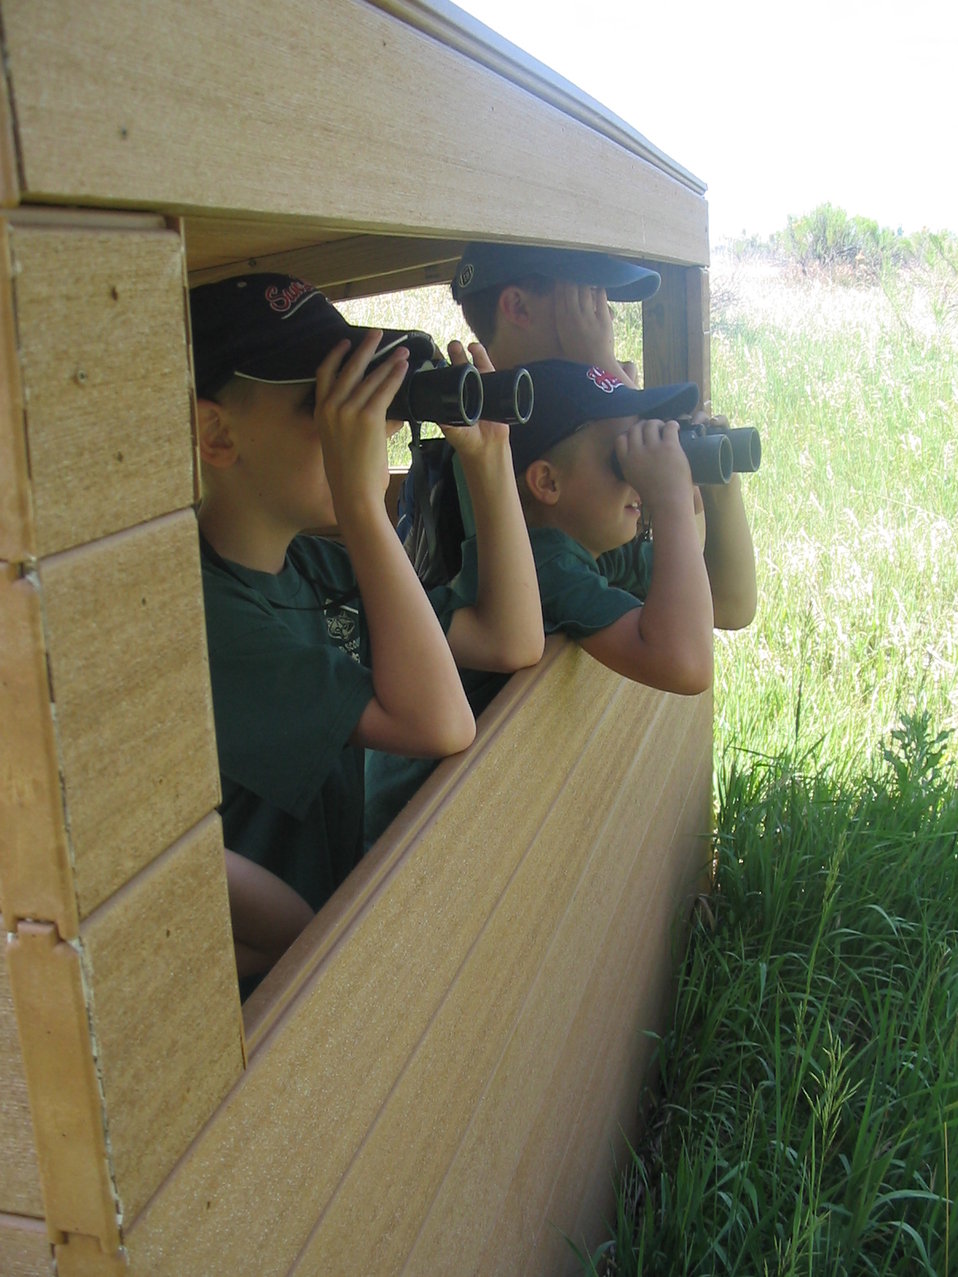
Wildlife Viewing Scouts